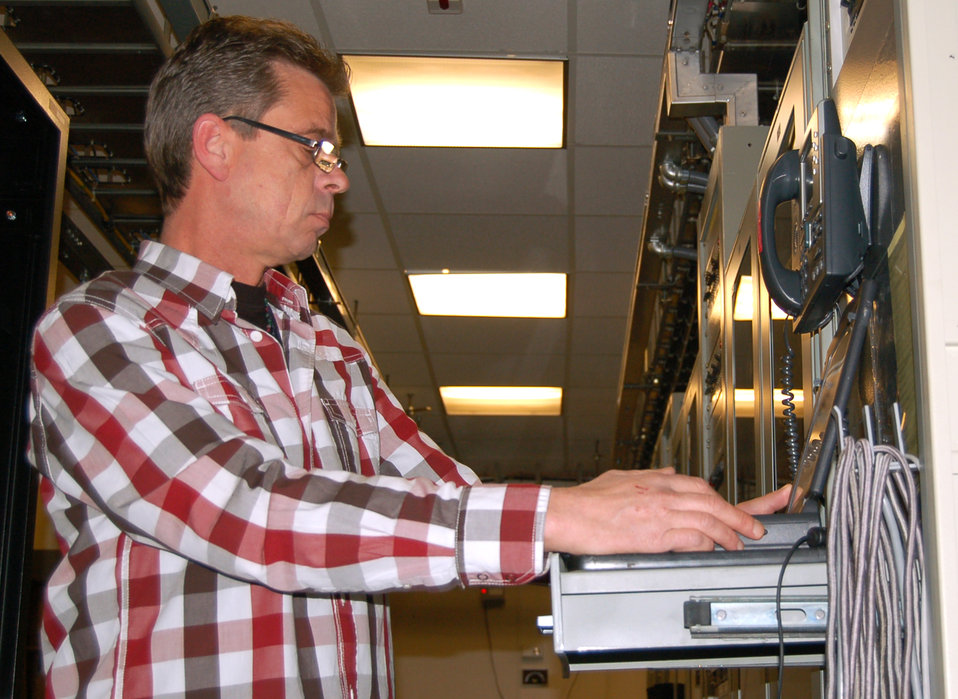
Spangdahlem comm facility earns top honors

Thad Baldridge, an ITT Industries contractor working for the 52nd Communications Squadron at Spangdahlem Air Base, Germany, monitors telecommunications equipment in the base's Global Information Grid office March 30. The office recently was named the European Defense Information Systems Network Outstanding GIG Facility of the Year.